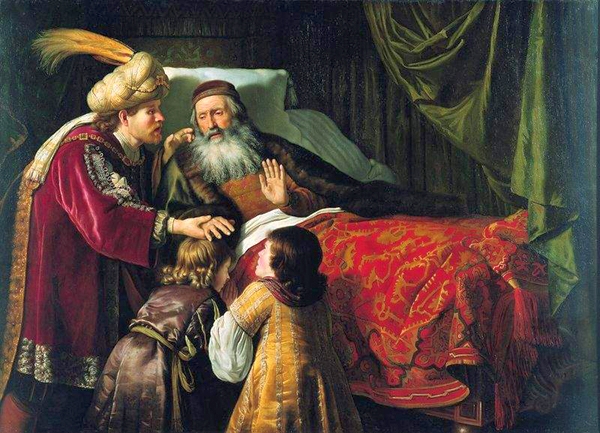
Victors Jacob blessing